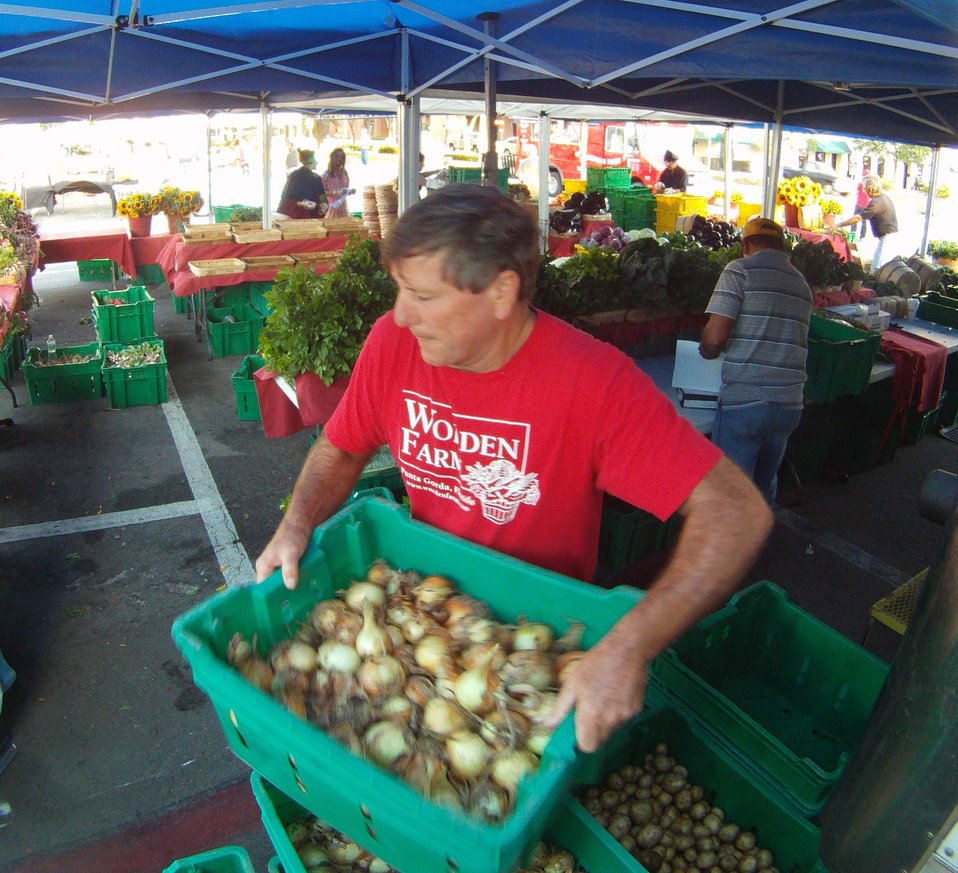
Early customers wait for Worden Farm's (www.wordenfarm.com) Rick Lovering and staff, who work fast to get bins of organic vegatables to their display tables, during set up at the Saturday Morning Market, in St. Petersburg, FL on April 14, 2012. Worden Farm is a family farm that provides certified organic produce to Southwest Florida through community supported agriculture (CSA) membership programs and retail sale at several farmer’s (community) markets. Chris Worden, Ph.D. and Eva Worden, Ph.D. founded and operates the farm that employs more than 20 people. Growing certified organic crops in the coastal sandy soil has required them to develop innovative farming techniques. These techniques help the farm as well as help the studies of universities and farm industry. There are several Worden Farm apprenticeships that provide hands-on training in all aspects of the farm, to include direct marketing at the Saturday Morning Market, or other market sites. The farm also holds culinary and gardening workshops, and other interactive educational events. One of their organic certifications is from the U.S. Department of Agriculture (USDA) and they have partnered with the USDA Natural Resources Conservation Service (NRCS) for soil conserving windbreaks and long tunnel structures to nurture seedlings and extend the growing season.